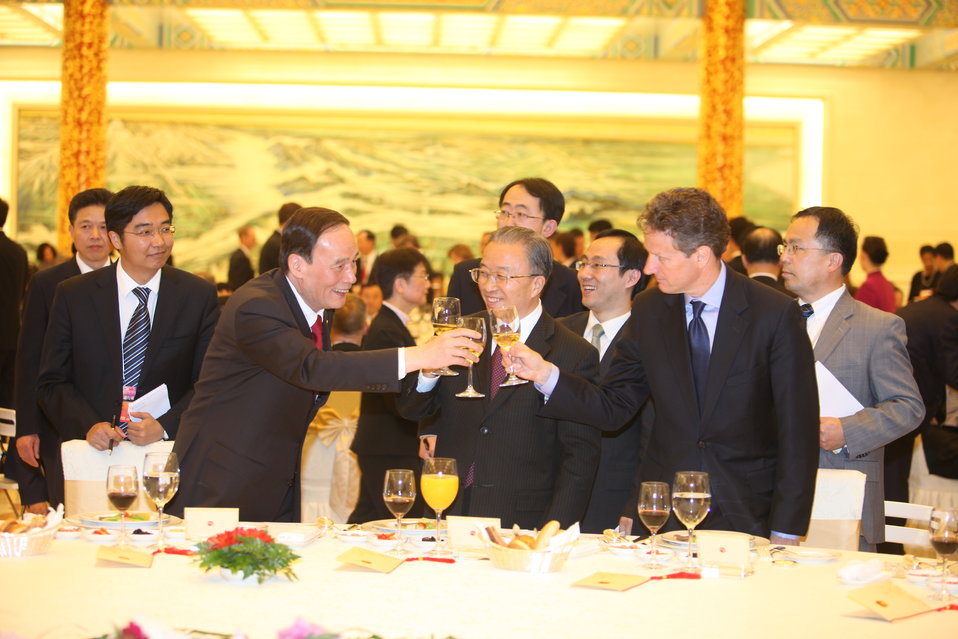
SandED 5/25/10

Secretary Geithner, Vice Premier Wang Qishan and Councilor Dai Bingguo toast at the S&ED Welcoming Dinner.